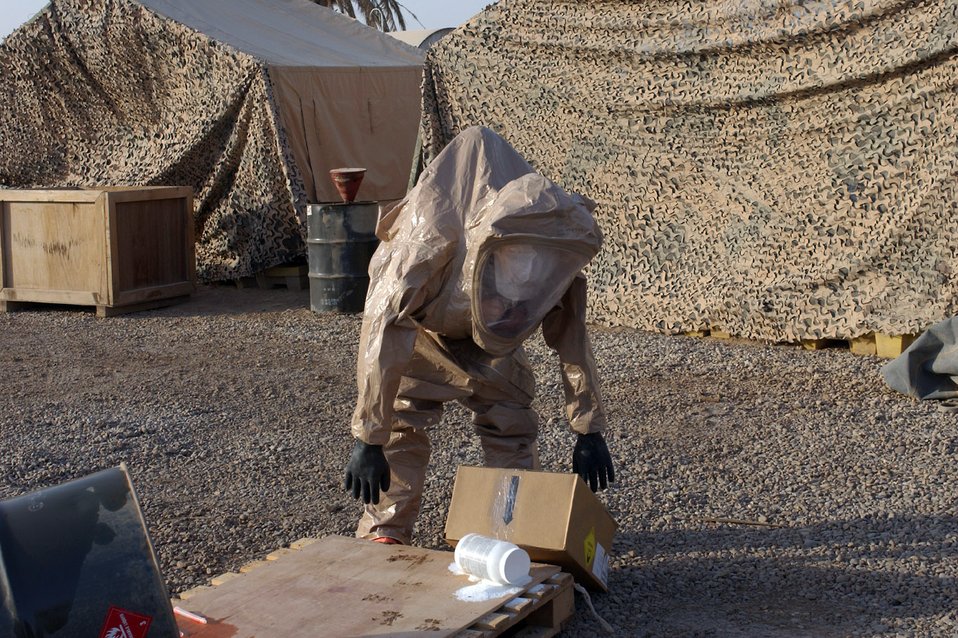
Deployed firefighters modern day dragon slayers

BAGHDAD, Iraq -- Airman 1st Class Matthew Metzger determines what type of simulated hazardous materials has been spilled during an exercise. He is assigned to the 447th Expeditionary Civil Engineer Squadron and is deployed from Kadena Air Base, Japan.